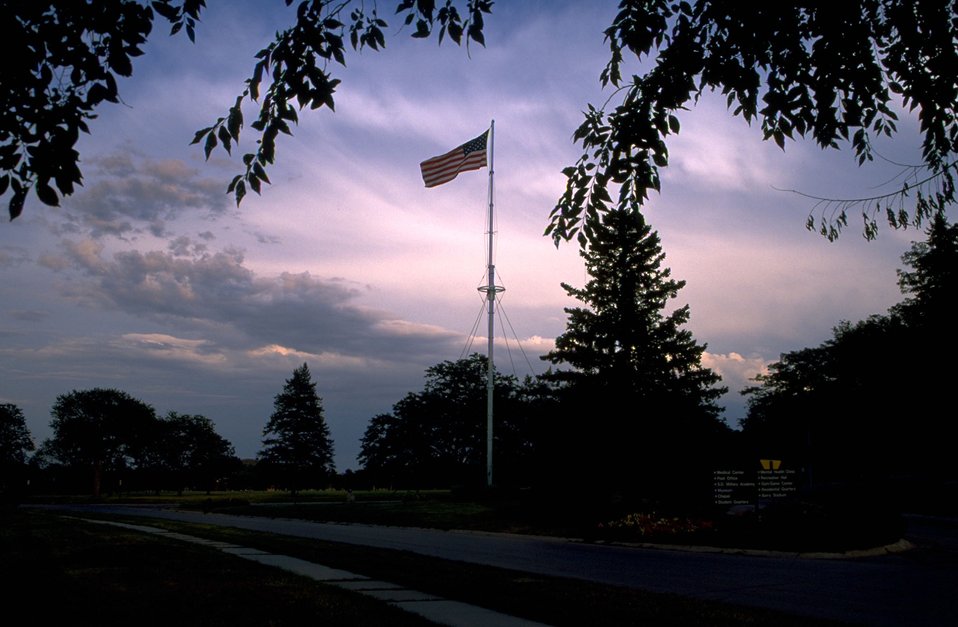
Flag silhouette at Fort Meade parade grounds